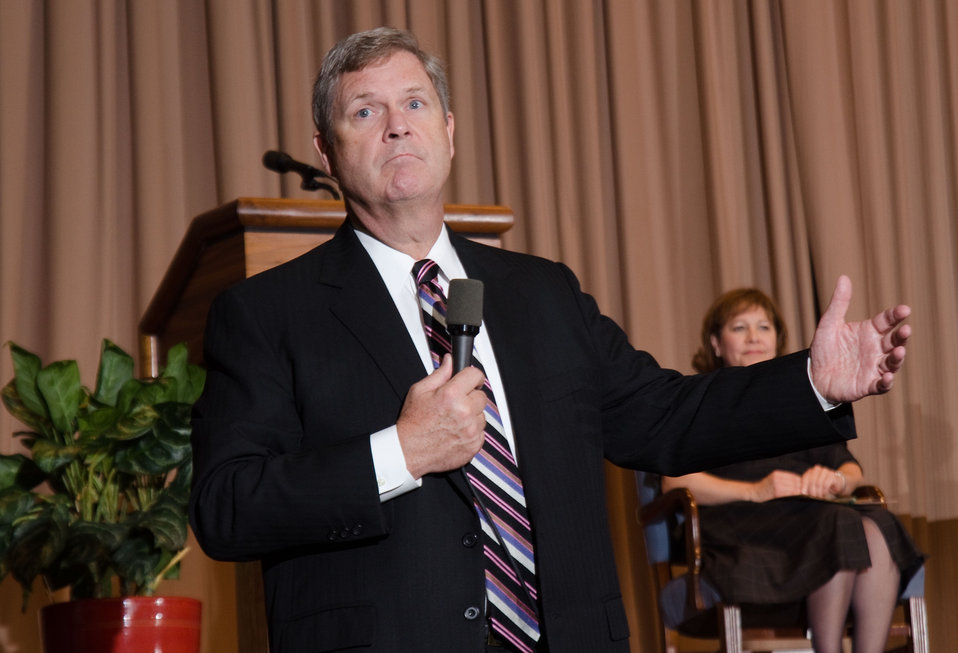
Agriculture Secretary Tom Vilsack took the floor to present his keynote speech at the National Hispanic Heritage Month observance at Jefferson Auditorium at the United States Department of Agriculture (USDA) in Washington, D.C. on Thursday, September 15, 2011.